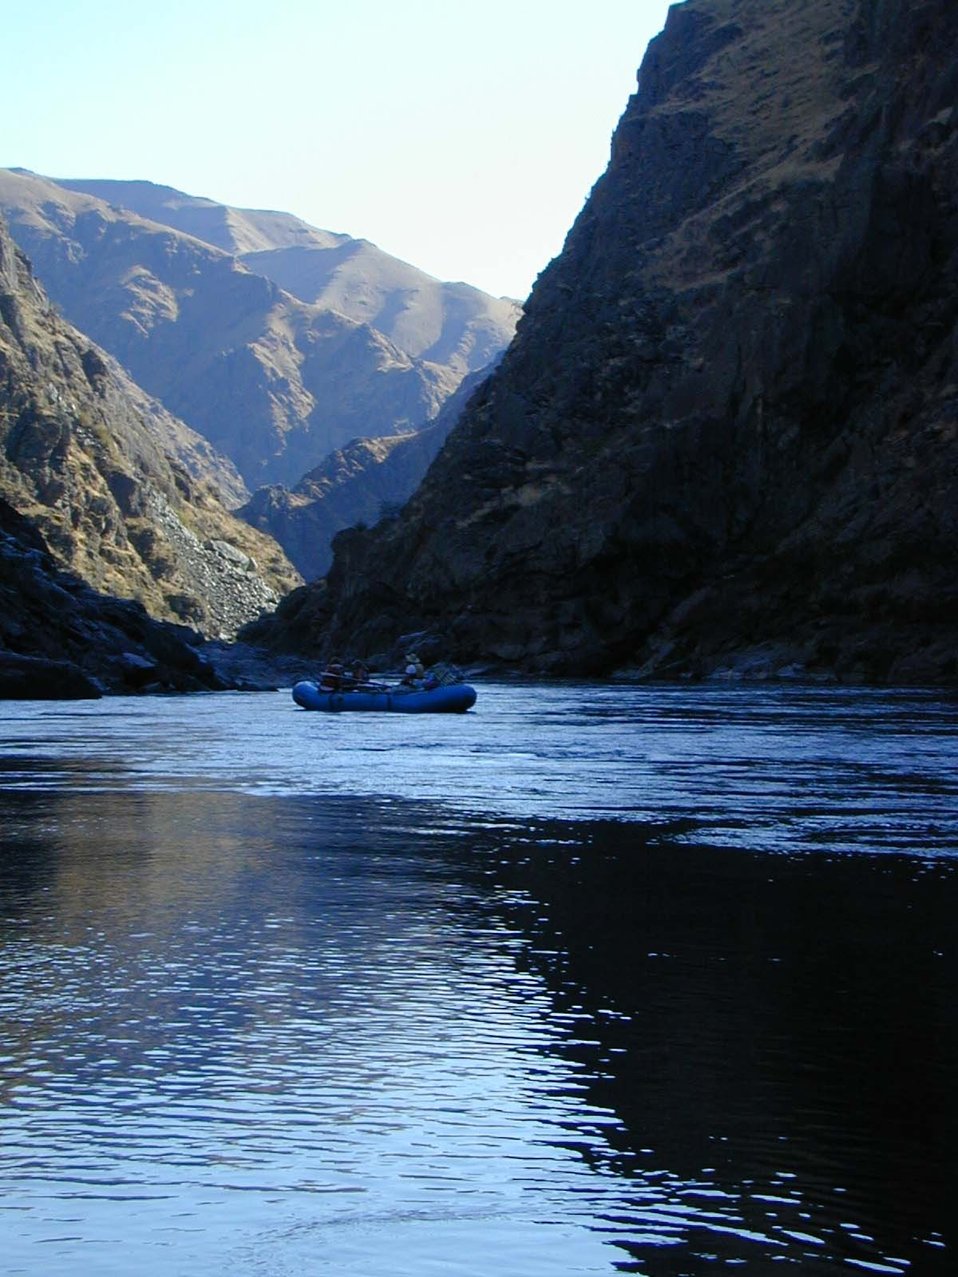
Blue Canyon, Lower Salmon River Cottonwood Field Office UCSC Upper Columbia Salmon Clearwater District